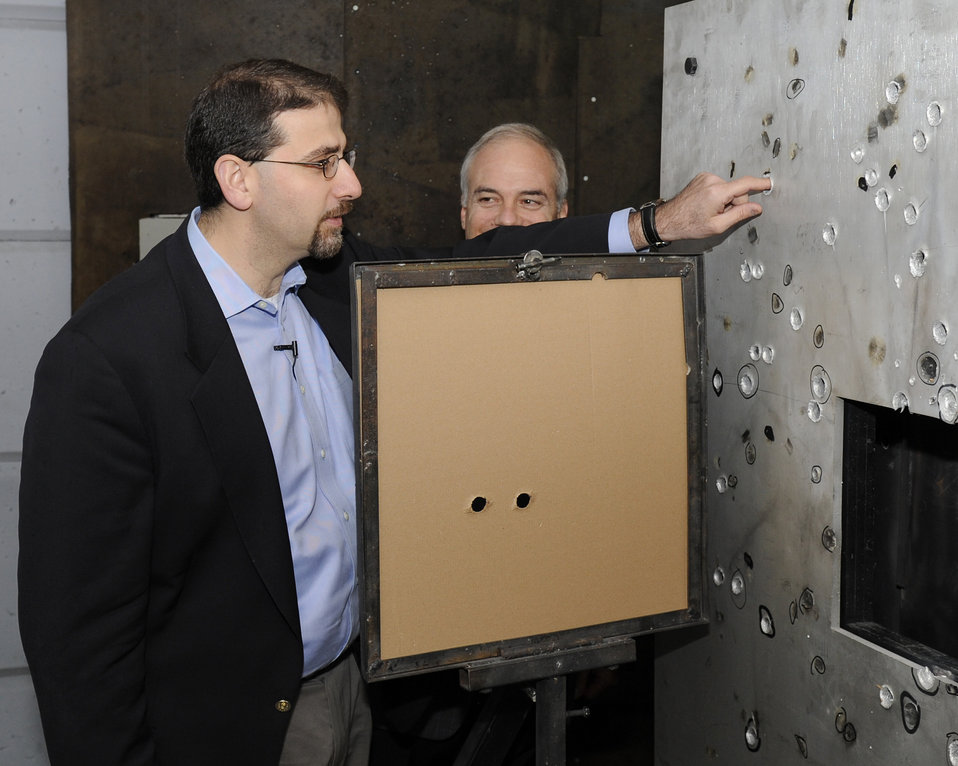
Ambassador Shapiro Visits the Kibbutz Sasa

U.S. Ambassador to Israel Daniel Shapiro visits the Kibbutz Sasa, home to the Plasan factory, in northern Israel on January 30, 2012. The Ambassador saw the full range of products, from reactive armor, to purpose built vehicles, to body armor. Plasan has delivered more than 8,000 armor kits to U.S units on active duty.